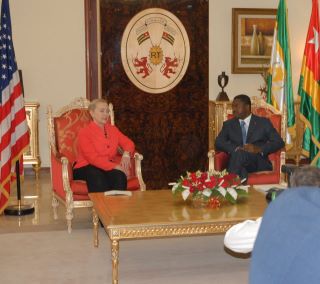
Secretary Clinton Meets With Togolese President Gnassingbe

U.S. Secretary of State Hillary Rodham Clinton meets with Togolese President Faure Gnassingbe in Lome, Togo, on January 17, 2012.